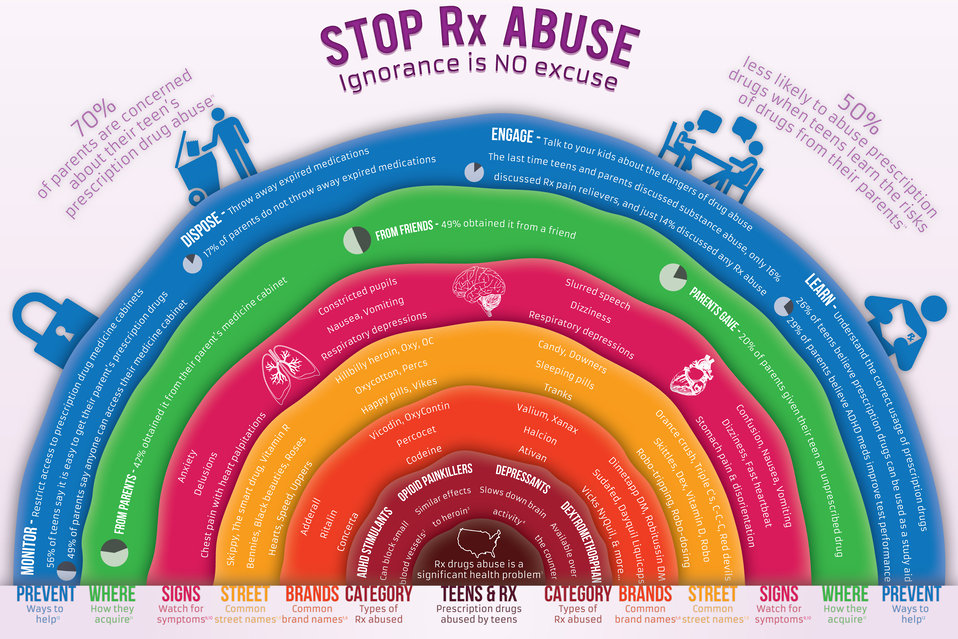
stop rx abuse-preview small

Text Description of Infographic

Center (First) Layer: Teens & Rx - Prescription drugs abused by teens
Prescription drug abuse is a significant health problem1.

Second Layer: Category: Types of Rx abused
ADHD stimulants can block small blood vessels2. Opioid painkillers have similar effects to heroin3. Depressants slow down brain activity4. Dextromethorphan is available over the counter.

Third Layer: Brands: Common brand names5,6
Common brand names for ADHD stimulants are Adderall, Ritalin and Concerta. Common brand names for opioid painkillers are Vicodin, OxyContin, Percocet and Codeine. Common brand names for depressants are Valium, Xanax, Halcion and Ativan. Common brand names for dextromethorphan are Dimetapp DM, Robitussin DM, Sudafed, Dayquil Liquicaps, Vicks NyQuil and more.

Fourth Layer: Street: Common street names7,8
Common street names for ADHD stimulants are Skippy, The smart drug, Vitamin R, Bennies, Black beauties, Roses, Hearts, Speed and Uppers. Common street names for opioid painkillers are Hillbilly heroin, Oxy, OC, Oxycotton, Percs, Happy pills and Vikes. Common street names for depressants are Candy, Downers, Sleeping pills and Tranks. Common street names for dextromethorphan are Orange crush, Triple C's, C-C-C, Red devils, Skittles, Dex, Vitamin D, Robo, Robo-tripping and Robo-dosing.

Fifth Layer: Signs - Watch for symptoms9,10
Symptoms of ADHD stimulant abuse include anxiety, delusions and chest pain with heart palpitations. Symptoms of opioid painkiller abuse include constricted pupils, nausea, vomiting and respiratory depressions. Symptoms of depressant abuse include slurred speech, dizziness and respiratory depressions. Symptoms of dextromethorphan abuse include confusion, nausea, vomiting, dizziness, fast heartbeat, stomach pain and disorientation.

Sixth Layer: Where - How they acquire11
From Parents: 42% of teens obtained prescription drugs from their parent's medicine cabinet. From Friends: 49% of teens obtained prescription drugs from a friend. Parents Gave: 20% of parents given their teen an unprescribed drug.

Outermost (Seventh) Layer: Prevent - Ways to Help12
MONITOR - Restrict access to prescription drug medicine cabinets. 56% of teens say it is easy to get their parent's prescription drugs. 49% of parents say anyone can access their medicine cabinet. DISPOSE - Throw away expired medications. 17% of parents do not throw away expired medications. ENGAGE - Talk to your kids about the dangers of drug abuse. The last time teens and parents discussed substance abuse, only 16% discussed prescription pain relievers, and just 14% discussed any prescription abuse. LEARN - Understand the correct usage of prescription drugs. 26% of teens believe prescription drugs can be used as a study aid. 29% of parents believe ADHD medications improve test performance.

Upper Left Corner: 70% of parents are concerned about their teen's prescription drug abuse13

Upper Right Corner: 50% less likely to abuse prescription drugs when teens learn the risks of drugs from their parents14

References

Rx drugs abuse is a significant health problem
2012 Partnership Attitude Tracking Study. Released April 23, 2013
www.drugfree.org/wp-content/uploads/2013/04/PATS-2012-FUL... (PDF, 1MB)
ADHD STIMULANTS - can block small blood vessels
Facts on stimulants. Accessed August 9, 2013.
teens.drugabuse.gov/sites/default/files/peerx/pdf/PEERx T... (PDF, 528KB)
OPIOID PAINKILLERS - similar effects to heroin
DrugFacts: Prescription and Over-the-Counter Medications. Revised May 2013.
National Institute on Drug Abuse website www.drugabuse.gov/publications/drugfacts/prescription-ove...
DEPRESSANTS - slows down brain activity
Central Nervous System (CNS) Depressants Facts, Accessed August 9, 2013.
teens.drugabuse.gov/drug-facts/central-nervous-system-cns...
Brand names of prescription drugs
Facts on Drugs: Prescription Drugs. Accessed June 12, 2013.
NIDA for Teens website teens.drugabuse.gov/drug-facts/prescription-drugs
Brand names of prescription drugs
The Medicine Abuse Project. Accessed August 9, 2013
Benzodiazepines medicineabuseproject.org/medicine/entry/benzodiazepines
Street names of prescription drugs (ADHD Stimulants, Opioid Painkillers, Depressants)
Facts on Drugs: Prescription Drugs. Accessed June 12, 2013.
NIDA for Teens website teens.drugabuse.gov/drug-facts/prescription-drugs
Street names of prescription drugs (Dextromethorphan)
Dextromethorphan (DXM) Accessed June 12, 2013.
The Medicine Abuse Project website medicineabuseproject.org/medicine/entry/dextromethorphan-dxm
Physical Symptoms of Abuse (ADHD Stimulants, Opioid Painkillers, Depressants)
The 11 Most Abused Prescription Drugs. Accessed June 12, 2013.
The Medicine Abuse Project website medicineabuseproject.org/medicine
Physical Symptoms of Abuse (Dextromethorphan)
Signs and Symptoms of Dextromethorphan Abuse. Accessed June 12, 2013.
Narconon International website www.narconon.org/drug-abuse/dextromethorphan-signs-sympto...
Where teens get Rx drugs (all statistics)
2012 Partnership Attitude Tracking Study. Released April 23, 2013
www.drugfree.org/wp-content/uploads/2013/04/PATS-2012-FUL... (PDF, 1MB)
Prevention (all statistics)
2012 Partnership Attitude Tracking Study. Released April 23, 2013
www.drugfree.org/wp-content/uploads/2013/04/PATS-2012-FUL... (PDF, 1MB)
70% of parents concerned about their teen's prescription drug abuse
2012 Partnership Attitude Tracking Study. Released April 23, 2013
www.drugfree.org/wp-content/uploads/2013/04/PATS-2012-FUL... (PDF, 1MB)
Teens who learn about the risk of drugs from their parents are up to 50% less likely to use drugs
Fact Sheet: Preventing Teen Prescription Medicine Abuse. Accessed June 12, 2013.
The Partnership at Drugfree.org website medicineabuseproject.org/images/uploads/misc/fact sheet.pdf (PDF, 106KB)